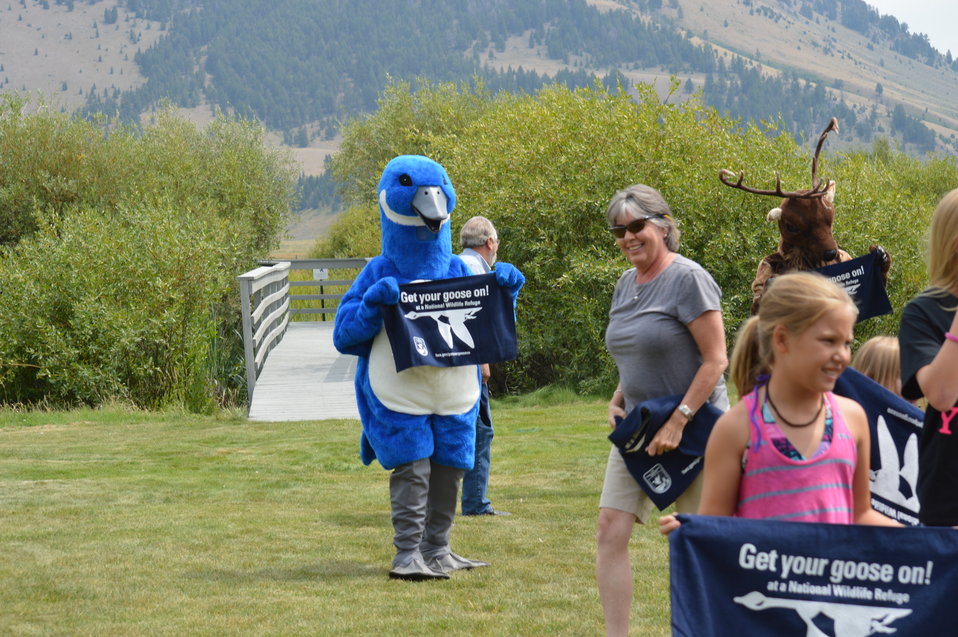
Get Your Goose On! - National Elk Refuge Style

On August 10, 2012 the U.S. Fish and Wildlife Service and Partners celebrated the 100 year anniversary of the establishment of the National Elk Refuge. In these photos, young attendees, along with Puddles the Blue Goose and the National Elk Refuge's mascot, showed us how to Get Your Goose On! with style.